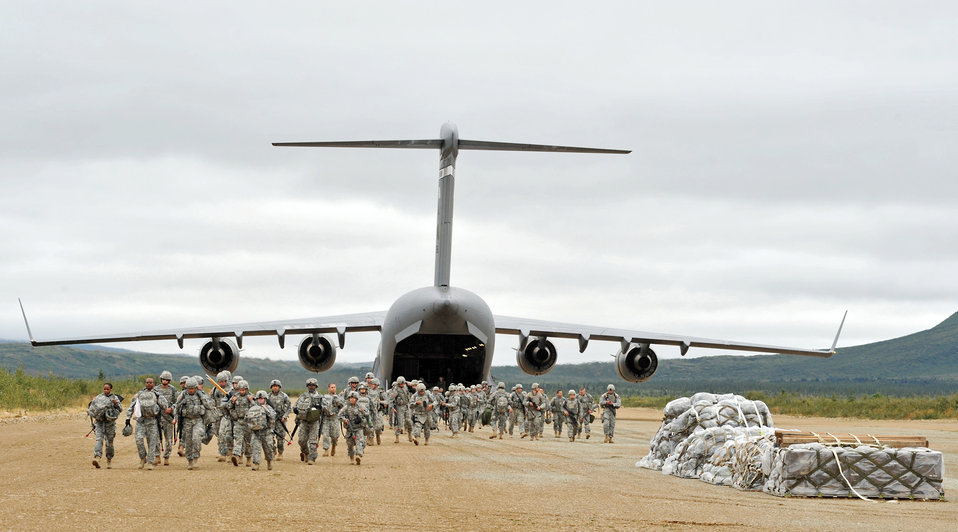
C-17 crew assists Soldiers for Arctic Response

Army Soldiers from the 17th Combat Service Support Battalion on Fort Richardson disembark a C-17 Globemaster III at an unimproved air strip Aug. 24 near Elmendorf Air Force Base, Alaska. The aircraft assisted in deploying 120 Soldiers from Fort Richardson to the airstrip during Arctic Response, an Army emergency deployment readiness exercise.